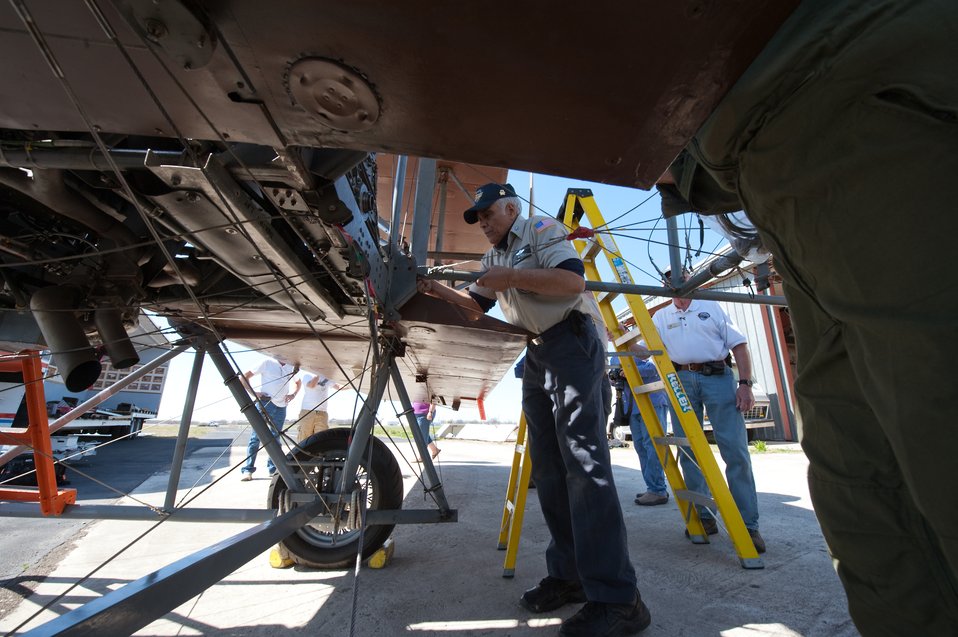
Wright

Joe Tyler calls out instructions to volunteers wiggling the rest of the tail section while works a mounting bolt into a Wright